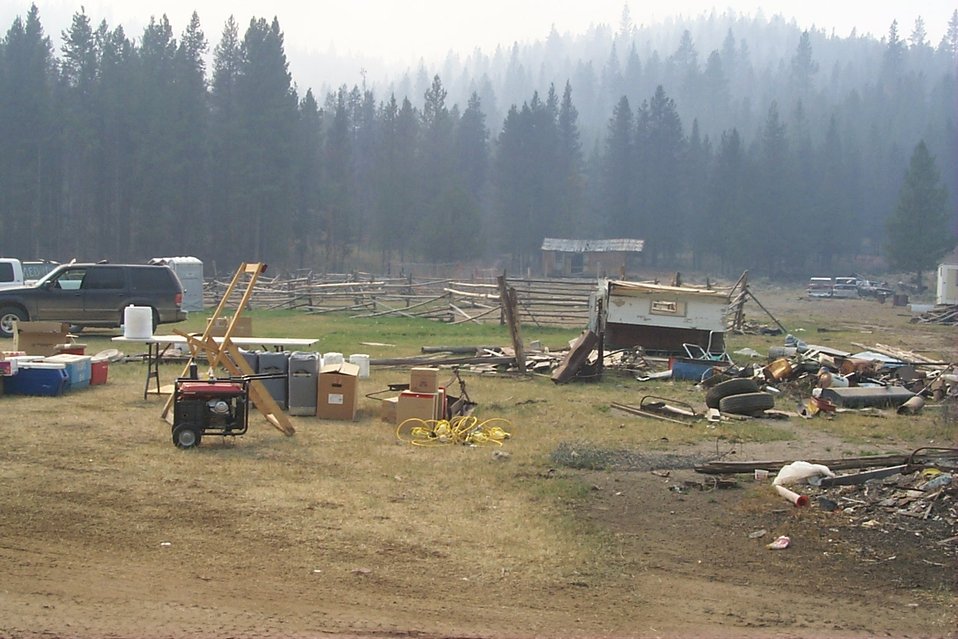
Fire Clearwater Fire Salmon Field Office USRD Upper Snake River District